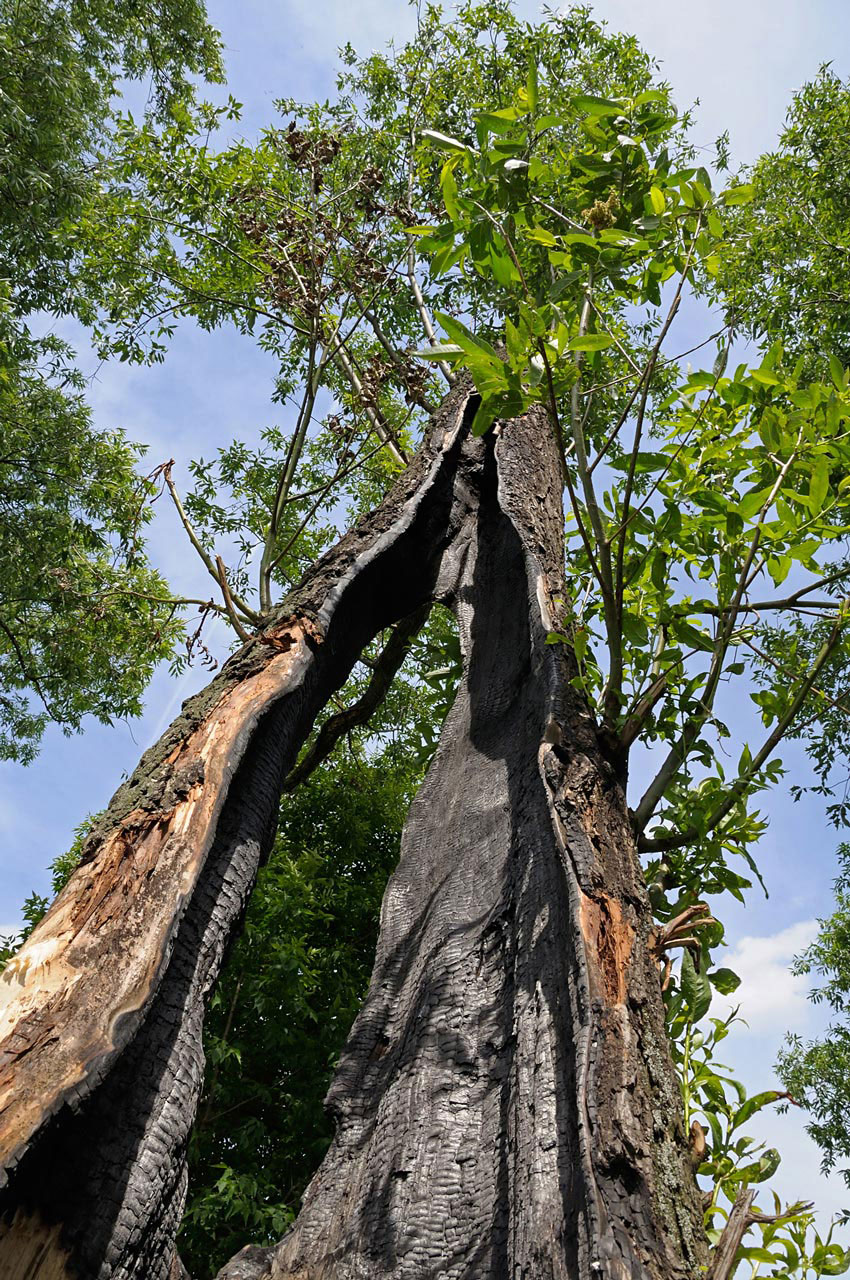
Tree after a lightning stroke.